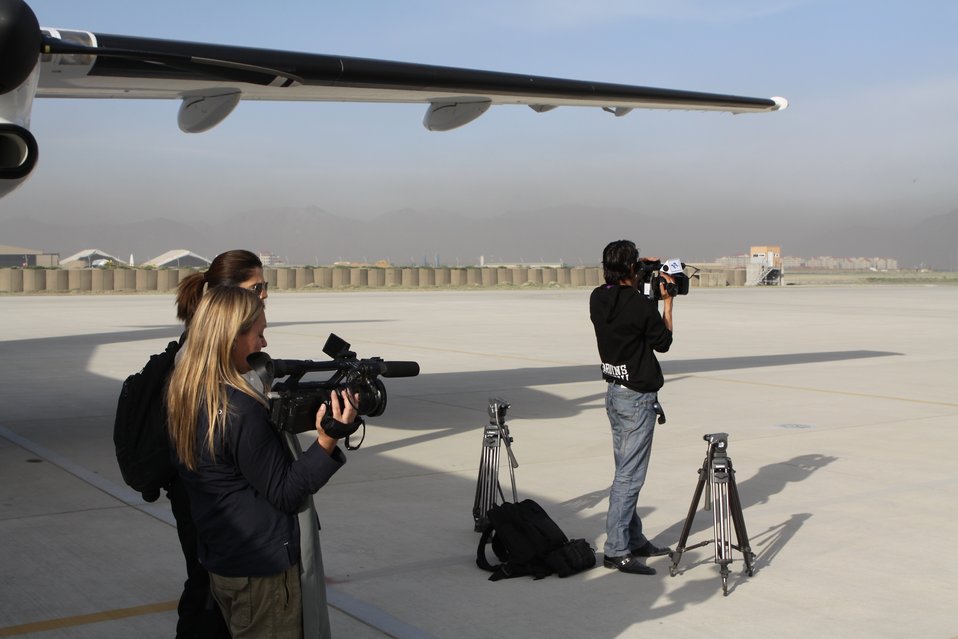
100525 Hirat Marble Conference 001